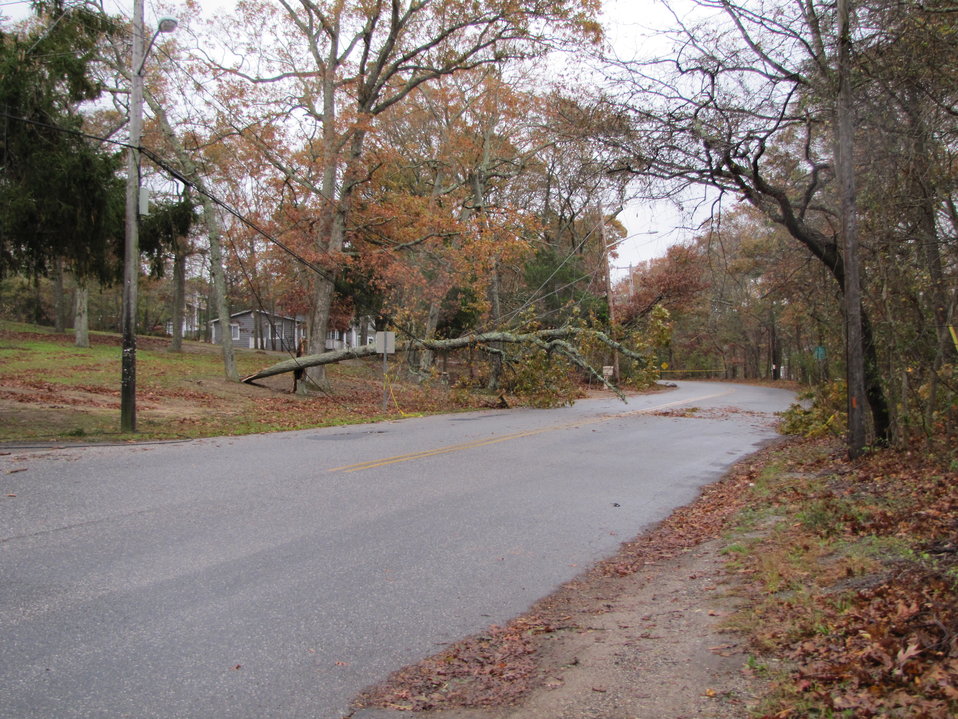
Power line damage at Wertheim National Wildlife Refuge (NY)

Downed power lines in front of Visitor Center, Wertheim National Wildlife Refuge, part of the Long Island National Wildlife Refuge Complex.